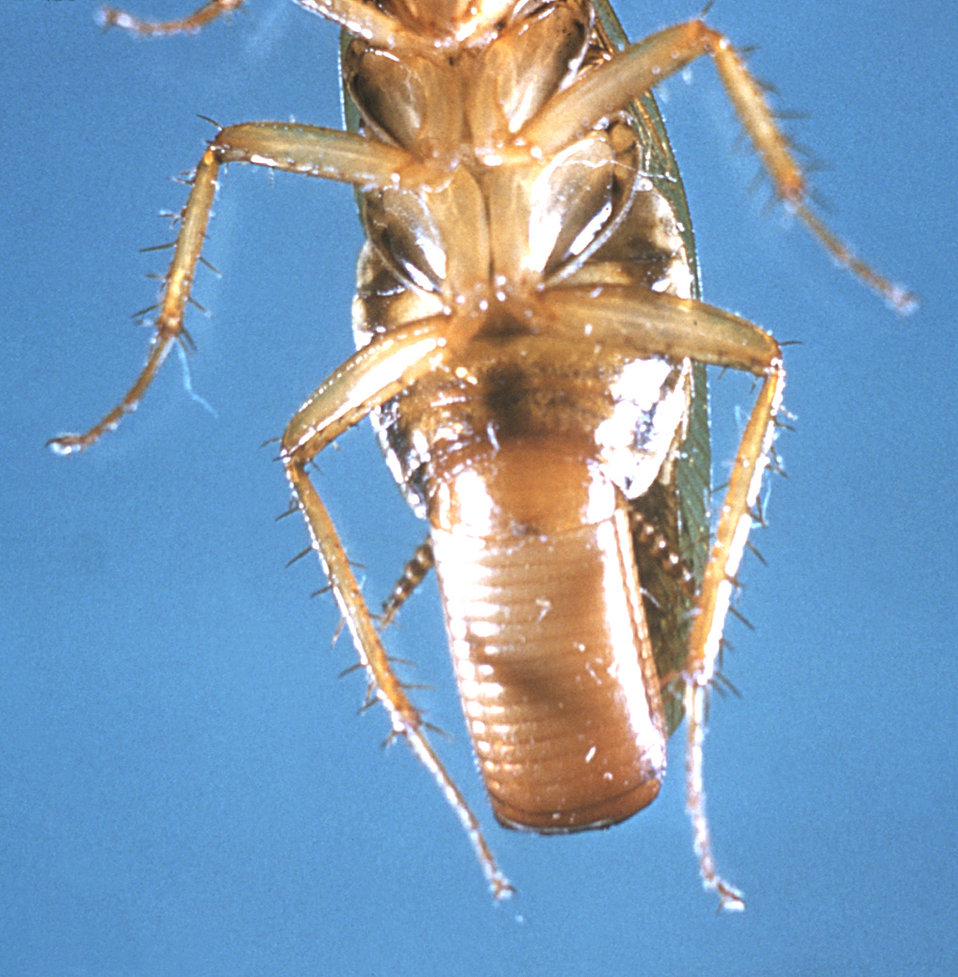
This is a close-up, ventral view of a female German cockroach, Blatella germanica, with its egg case, or ootheca.